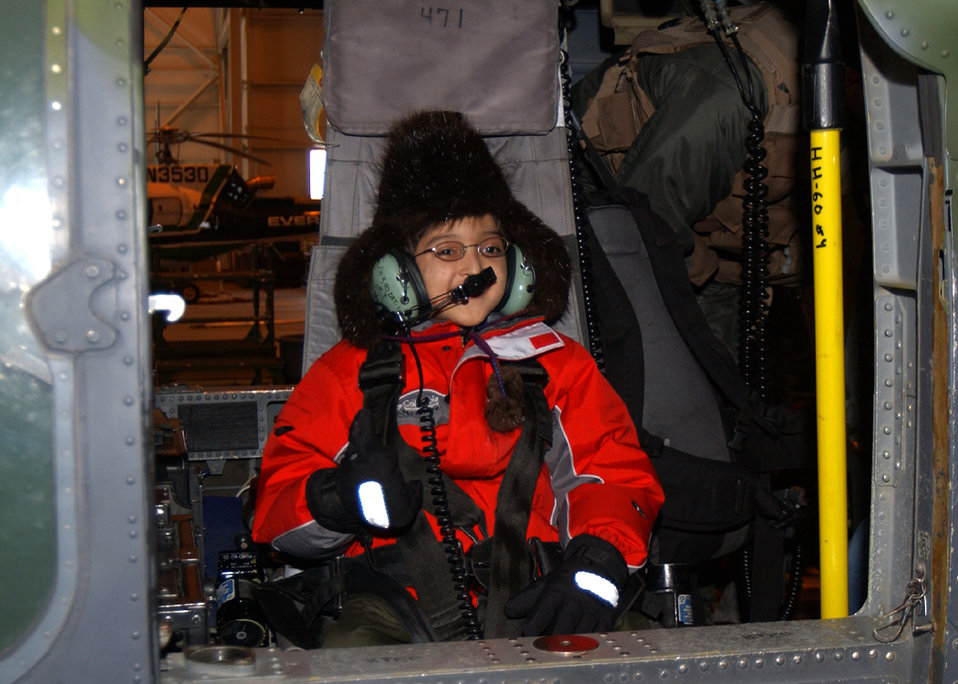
Pilot for a day

EIELSON AIR FORCE BASE, Alaska -- Kameron Ballard-Huffman gives a